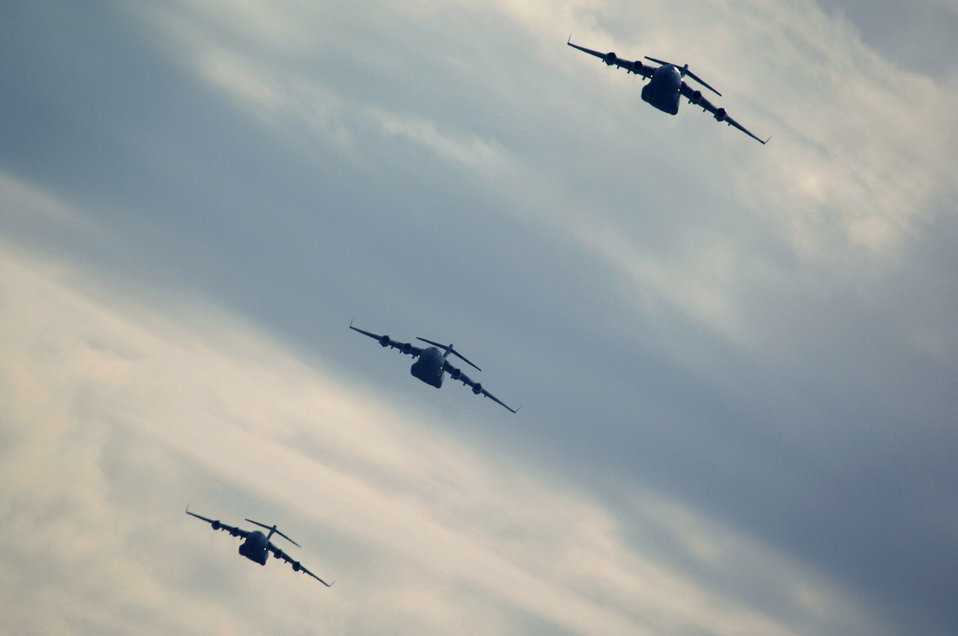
20 Charleston C-17s fill the sky

Several C-17 Globemaster IIIs fly as part of a 20-ship formation Dec. 21 over Charleston Air Force Base, S.C. The C-17s, assigned to the 437th and 315th Airlift Wings at Charleston AFB, were part of the largest formation in history from a single base and demonstrated the strategic airdrop capability of the Air Force.